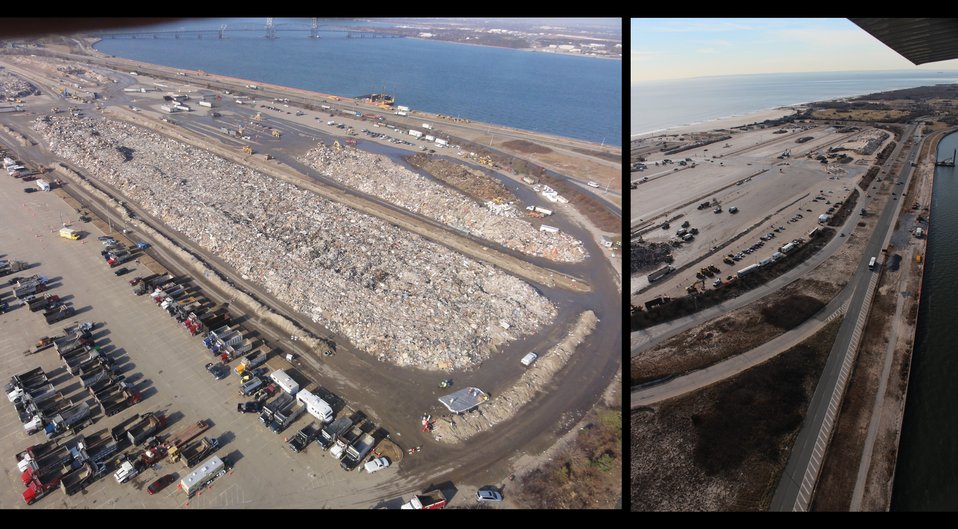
November 18 / December 6, 2012 View of Jacob Riis Park Queens, New York

Jacob Riis Park is located on the Rockaway Peninsula in Queens, New York, one of the areas hard hit by Hurricane Sandy. The parking lot of the park was used by the City of New York as a staging area for hurricane debris. For weeks, the park was active with trucks bringing and shipping out garbage and debris collected from city streets and households.

“After view” December 6, 2012 Flyover view of Jacob Riis Park, Queens, New York

Nearly a month later, Jacob Riis Park was a different scene. The vast amount of debris was gone, and much of the trucking activity had slowed down.